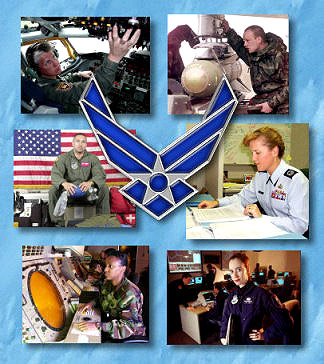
Leader's Guide for Managing Personnel In Distress